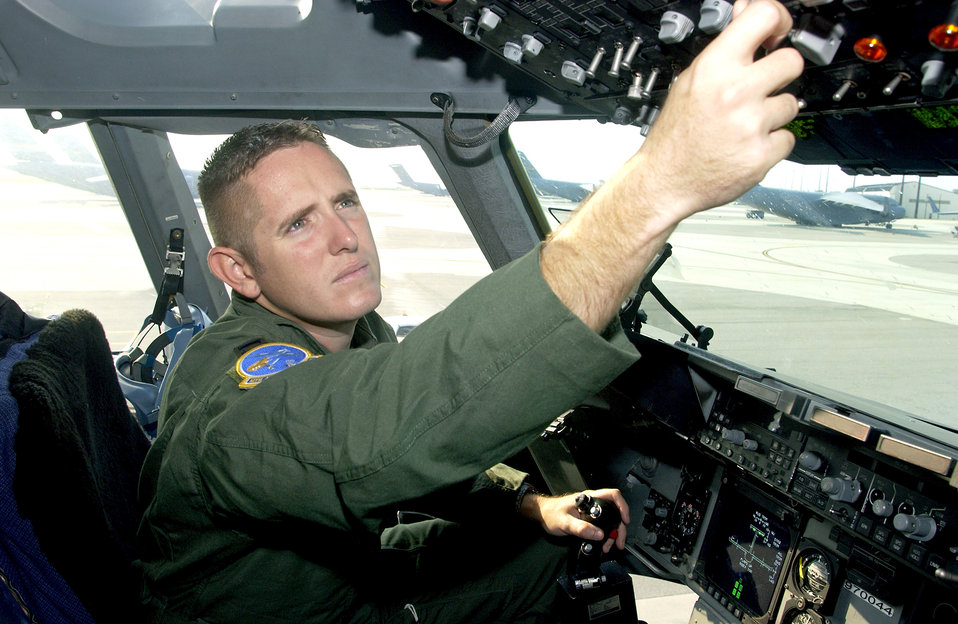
C-17 pilot on standby on Air Force birthday

Capt. Carl Miller performs a preflight inspection in the cockpit of a C-17 Globemaster III Sept. 18. Captain Miller is a pilot with the 14th Airlift Squadron at Charleston Air Force Base, S.C.